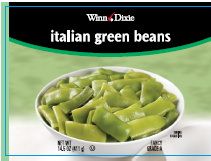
RECALLED - Green Beans

December 28, 2011 - Product Recall - Winn-Dixie Issues Voluntary Recall on Winn-Dixie Brand Italian Green Beans.